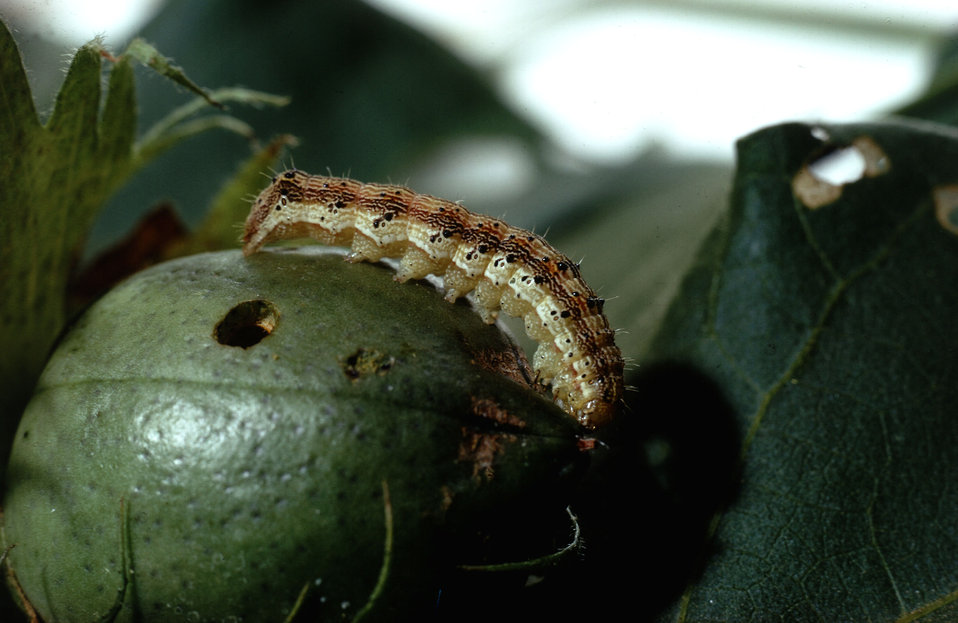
Corn earworm gnaws on an immature cotton boll.